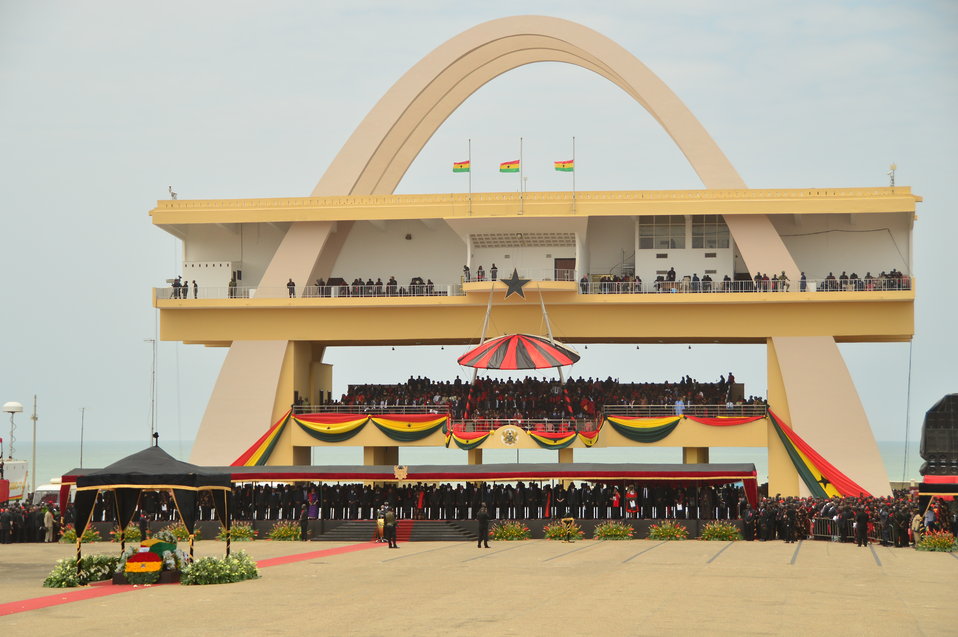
Independence Square in Accra, Ghana, hosts a State Funeral for President John Atta Mills on August 10, 2012.